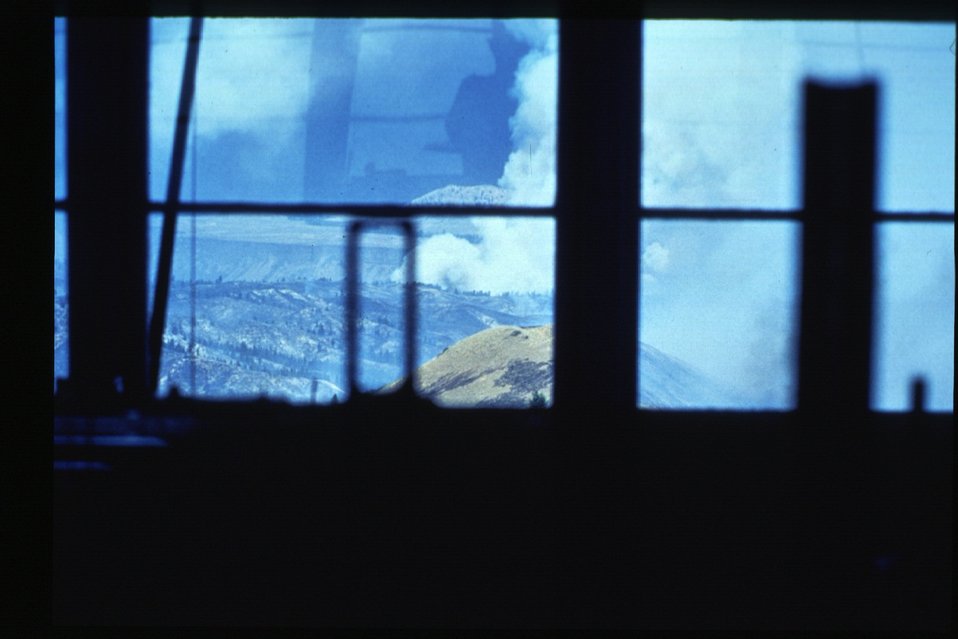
Boise Foothills Fire Danskin Mountains and South Fork of Boise River Smoke LSRD Lower Snake River District